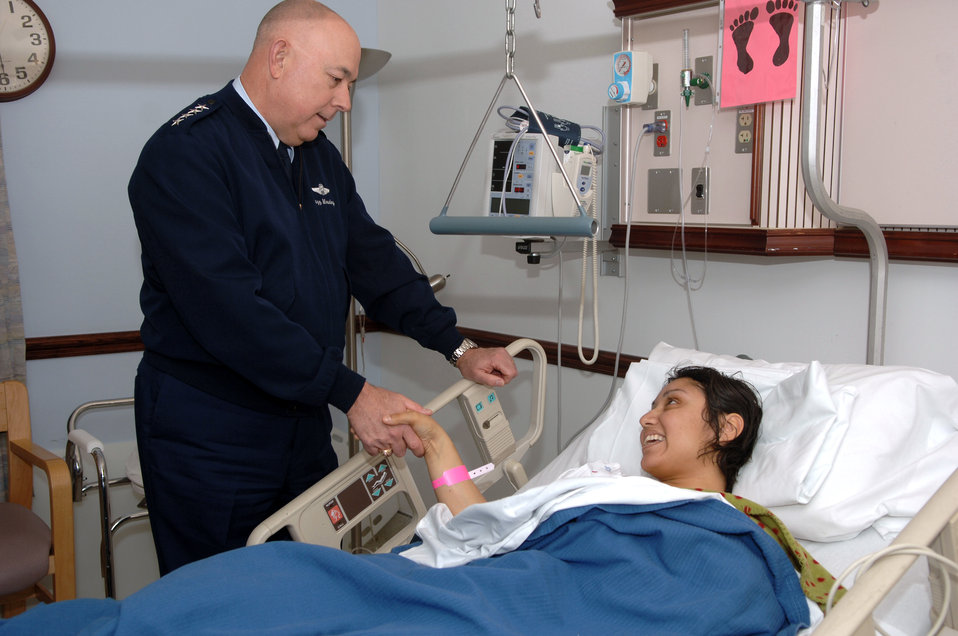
CSAF visits hero at Malcom Grow

Air Force Chief of Staff T. Michael Moseley offers his best wishes to Staff Sgt. Aime Gaona Dec. 27 during a visit to Malcolm Grow Medical Center at Andrews Air Force Base, Md. Sergeant Gaona was wounded while deployed to Iraq from Luke AFB, Ariz. She arrived at Malcolm Grow Dec. 22 after being shot in the right thigh by a sniper just four days earlier.